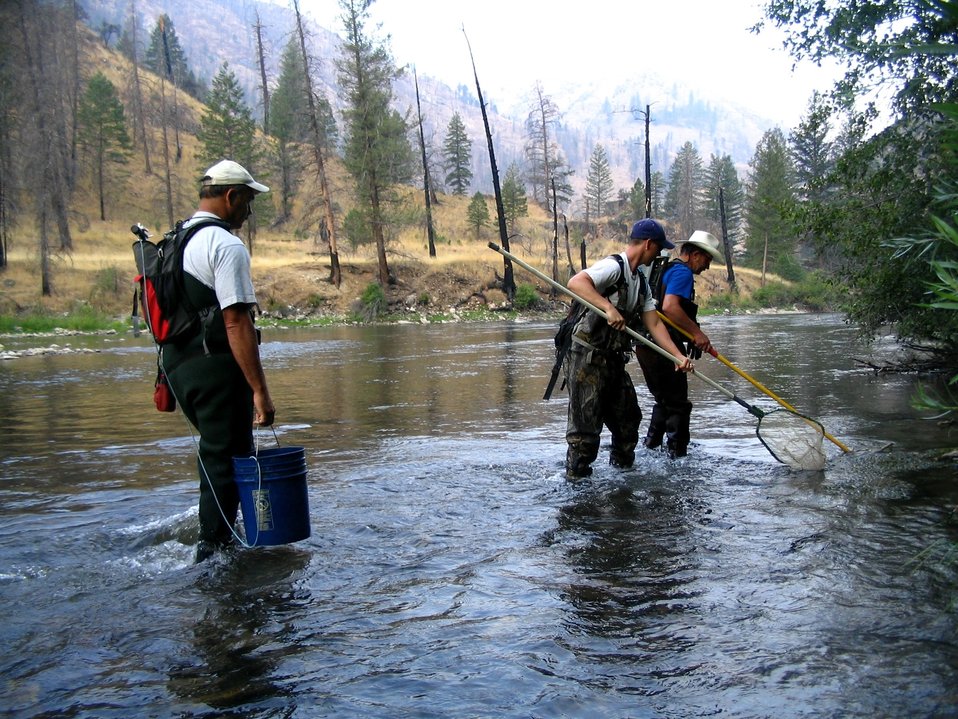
Electro-shocking for juvenile wild salmon (parr) to PIT-tag for mark recapture study in Salmon River drainage in Idaho wilderness.